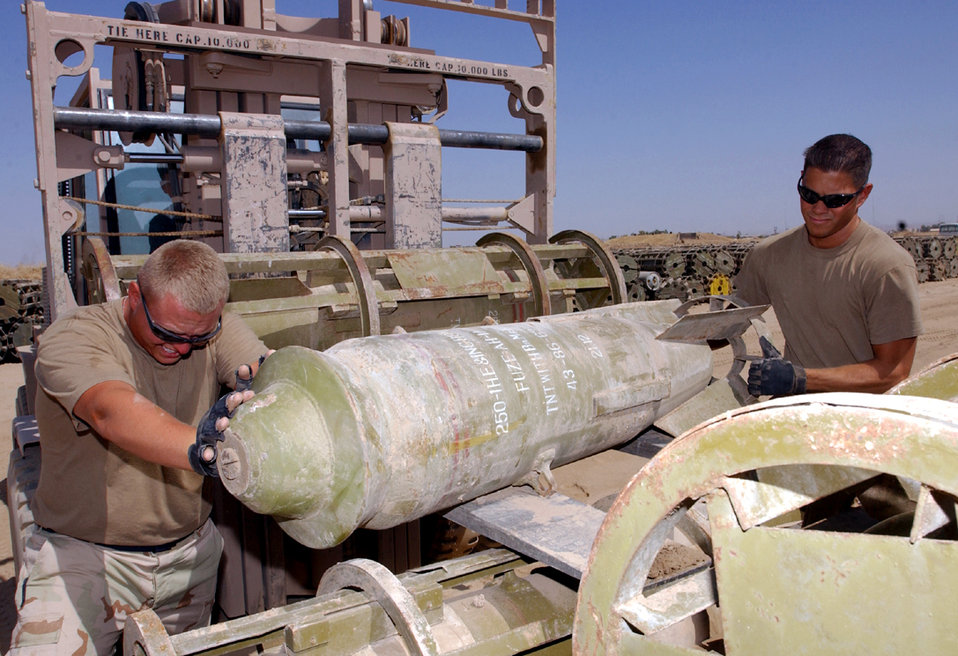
Cleaning house

KIRKUK AIR BASE, Iraq -- Senior Airman Brandon Taft (left) and Staff Sgt. Brett Kemp unload an Iraqi bomb, the last of the buried munitions removed from the storage area here. Airmen have removed more than 3.5 million pounds of explosives, including more than 1,800 bombs. Taft and Kemp are assigned to the 506th Expeditionary Aircraft Maintenance Squadron.